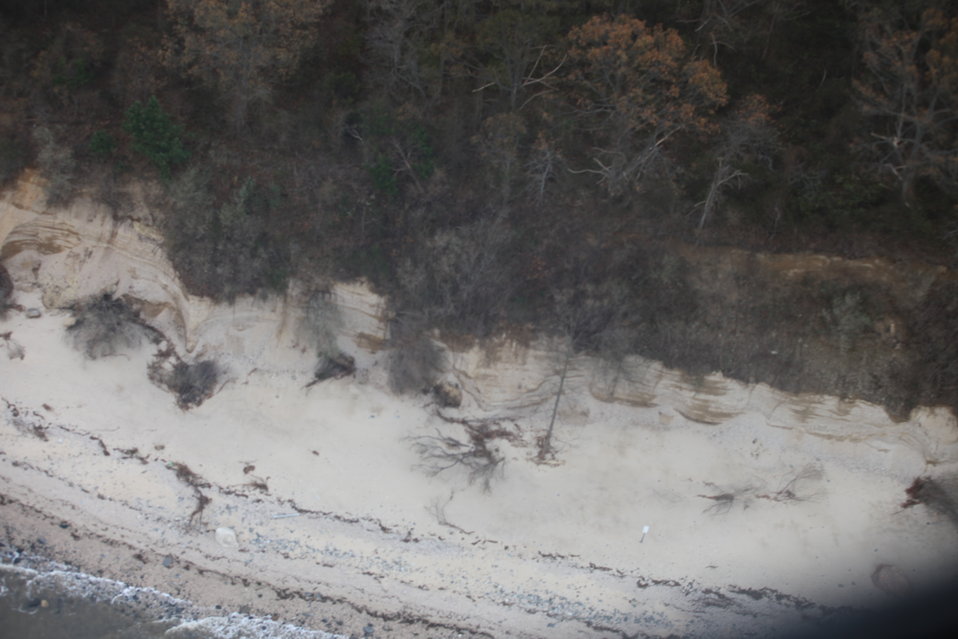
Debris on Lido Beach National Wildlife Refuge (NY)

Debris and washup at the Lido Beach National Wildlife Refuge on Long Island, NY after storm Sandy.